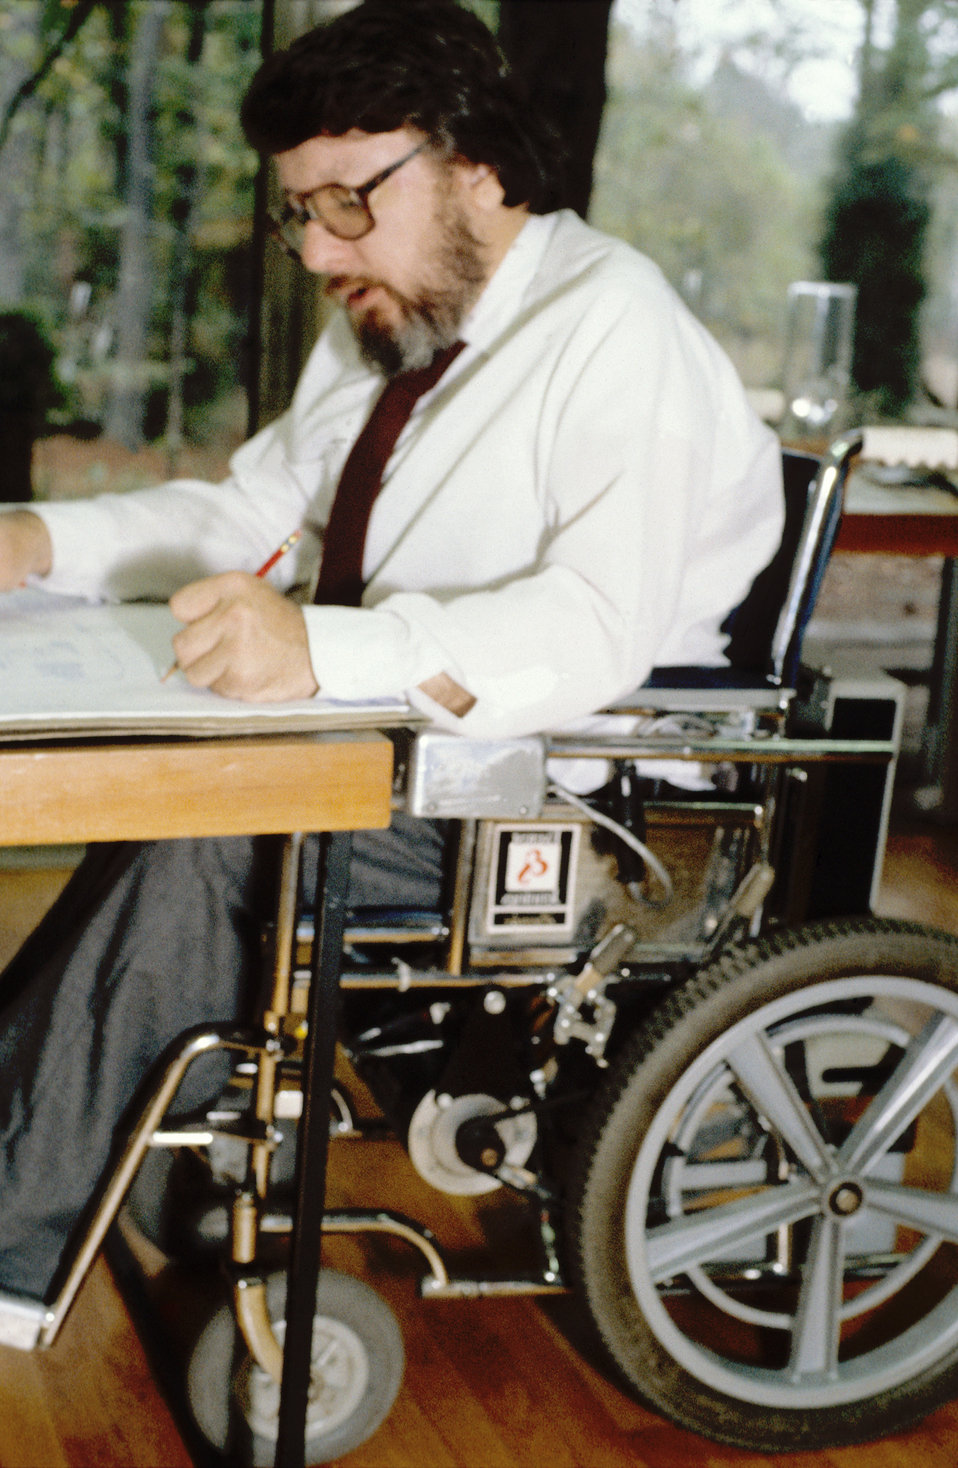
Seated in his wheelchair at his accessibility-enhanced drawing table, architect Ron Mace was in the process of producing new designs, which would focus on making habitats and products as universally usable as possible. Mr. Mace was a principle of Barrier Free Environments, Inc. (BFE), and a co-founder of the Center for Universal Design (CUD). He developed the concept of universal design in the mid-1980's, and died in 1998.